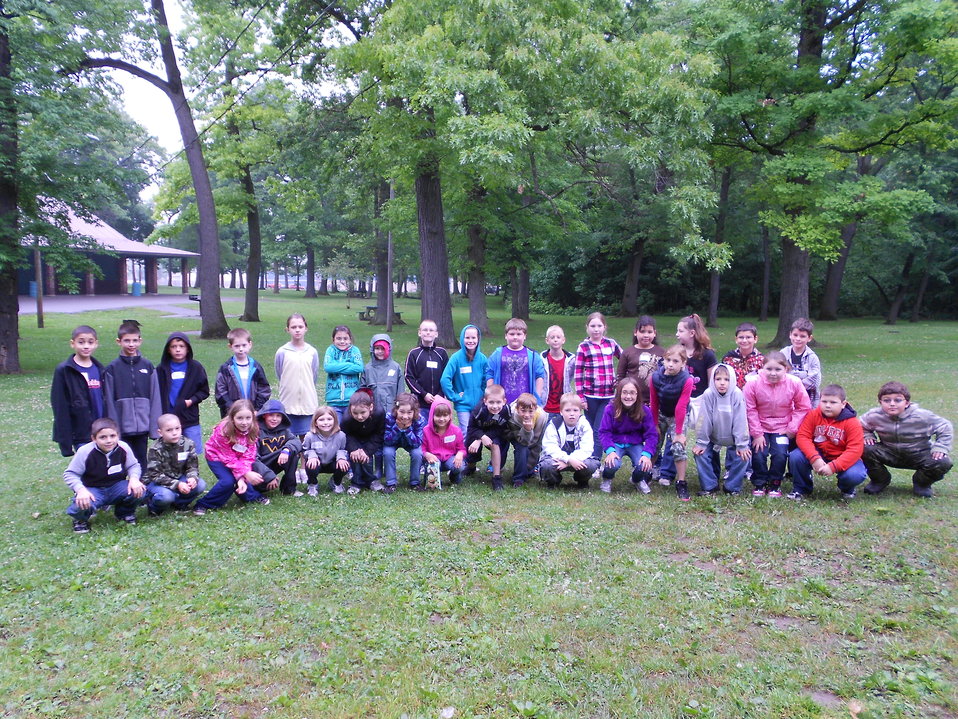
Group photo